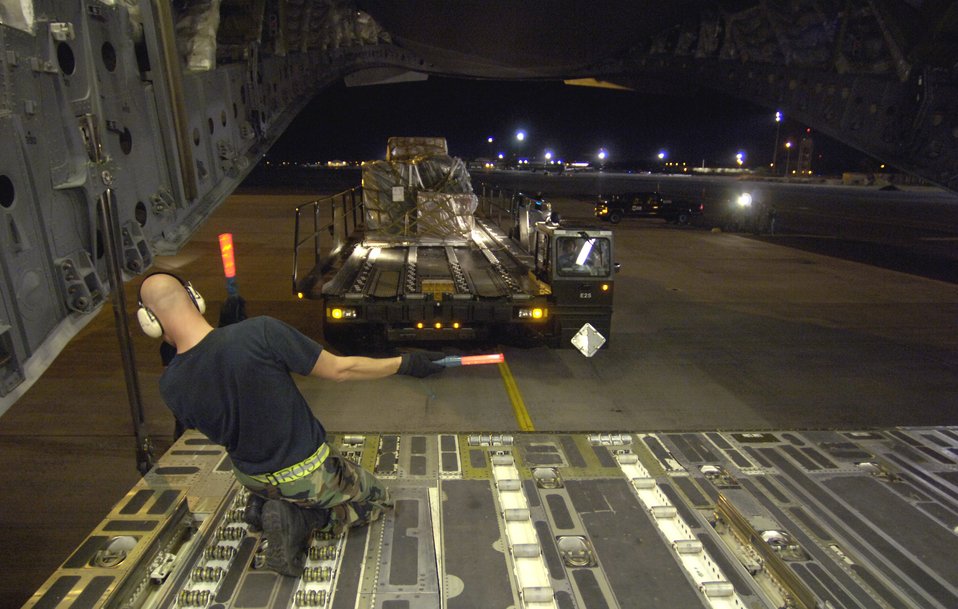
Philippine relief

HICKAM AIR FORCE BASE, Hawaii (AFPN) -- Staff Sgt. Nathan Rust directs a K-loader to on-load pallets on a C-17 Globemaster III to support relief efforts in the Philippines. The composite C-17 squadron of active duty and Hawaii Air National Guard loaded the pallets Feb. 21 to carry military rations, water, cots, tents and personnel from the 15th Airlift Wing to help out with the mudslide disaster. Sergeant Rust is from the 735th Air Mobility Squadron at Hickam AFB, Hawaii.